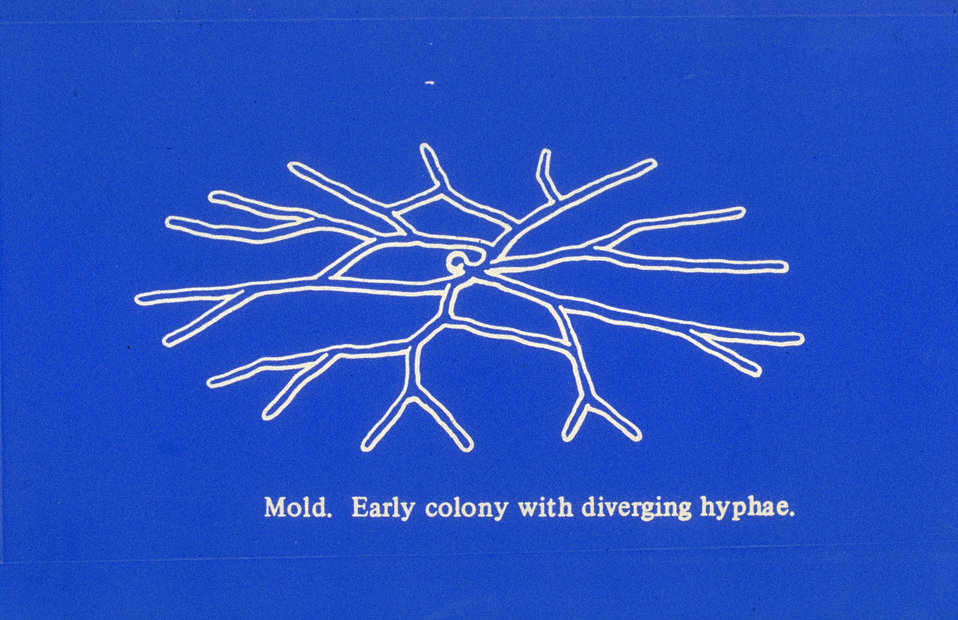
Composed of branching hyphae, this illustration depicts a simplified version of a young mold colony, and its branching morphology.